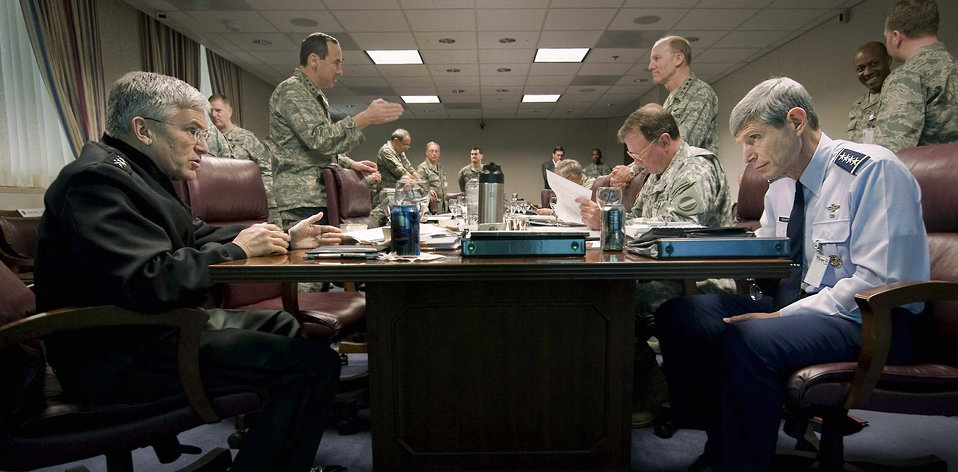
Leaders meet for series of high-level 'warfighter talks'

Chief of Staff of the Army Gen. George W. Casey Jr. talks with Chief of Staff of the Air Force Gen. Norton Schwartz during a break in the annual Army-Air Force staff talks held in the Pentagon Feb. 10. The intent of the meeting was for the service leaders to collaborate on issues of mutual concern.